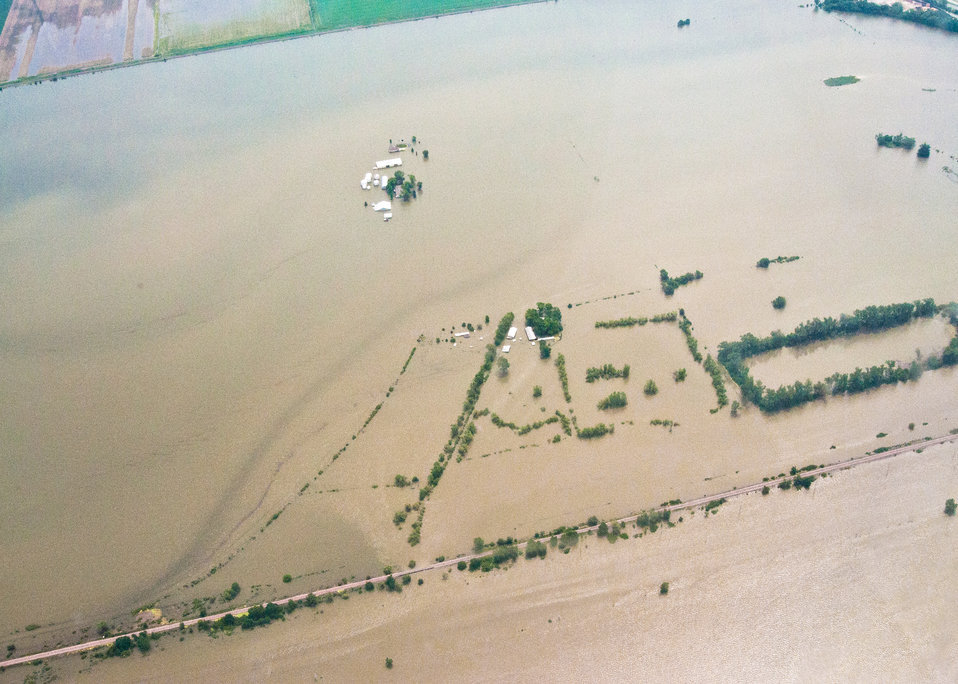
The Missouri river flooded hundreds of acres in Nebraska and Iowa. Agriculture Secretary Tom Vilsack visited the area on Friday, June 17, 2011, and spoke to agriculture producers and community leaders. The goal of the meetings was to get a firsthand look and provide that information back to Washington necessary to better deliver disaster programs expeditiously to effectively respond to this disaster. The United States Department of Agriculture agencies have programs to assist producers as they assess recovery efforts to assist with recovery in rural areas reeling from a natural disaster. USDA and the entire federal family have been working with state and local officials to provide relief to residents, farmers, ranchers and businesses.